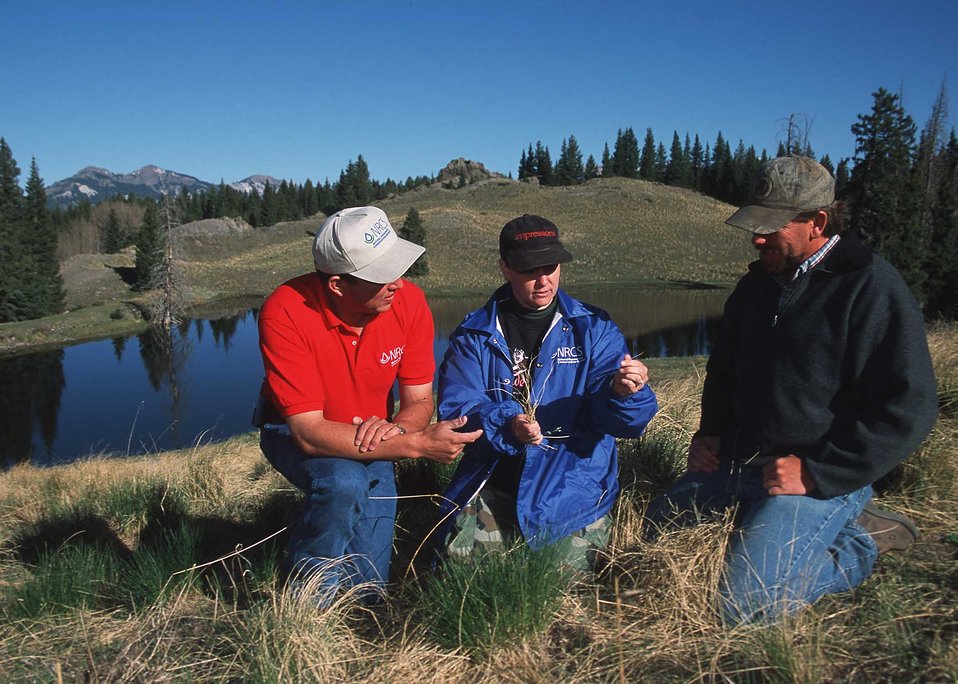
Northwest Field Team Leader Norm Vigil (red) and Soil Conservationist Jill Jensen (blue) provide grazing recommendations for a ranch that specializes in raising elk for hunting. Chama, New Mexico.